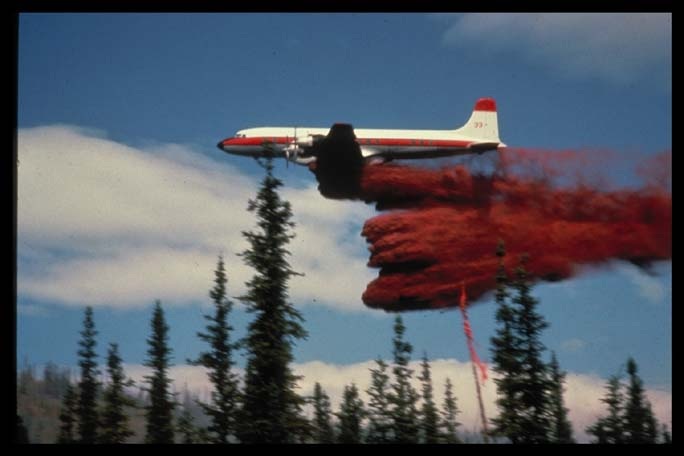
Airtanker drop